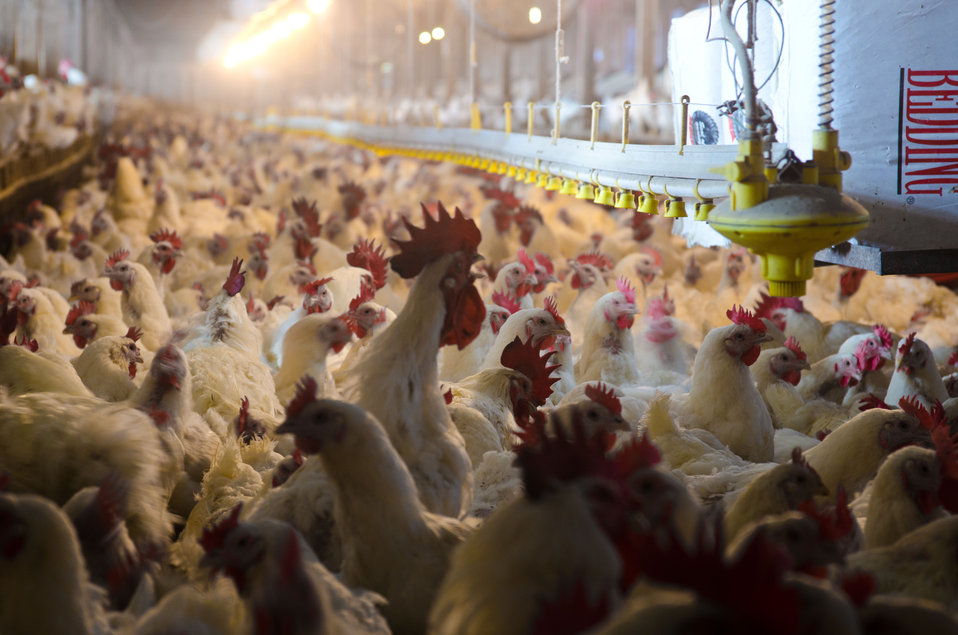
Some of the 17,000 poultry at Seldom Rest Farms located, north of Myerstown, PA, on Wednesday, April 20, 2011. The chickens are kept in a two story chicken house and produce approximately 2.5 million chicks each year. To supplement their electrical needs, they chose a contractor who knew about United States Department of Agriculture (USDA) Rural Energy for America program (REAP) grants and helped them through the application process. The farm was awarded a $152,000 grant (25% of the cost). to install the 1001kW solar array to power their farm, a neighboring farm and homes on the local electrical grid. The 240 solar panels were ground mounted with 5-foot clearance underneath to allow sheep to graze and rest underneath protected from the rain, sun or snowfall. Ten inverters change the DC electrical energy from the panels into AC energy that goes into the local power grid. Spring statistics show it is producing more than expected. REAP offers grants and/or loan guarantees for the purchase and installation of renewable energy generating systems and for energy efficiency improvements.